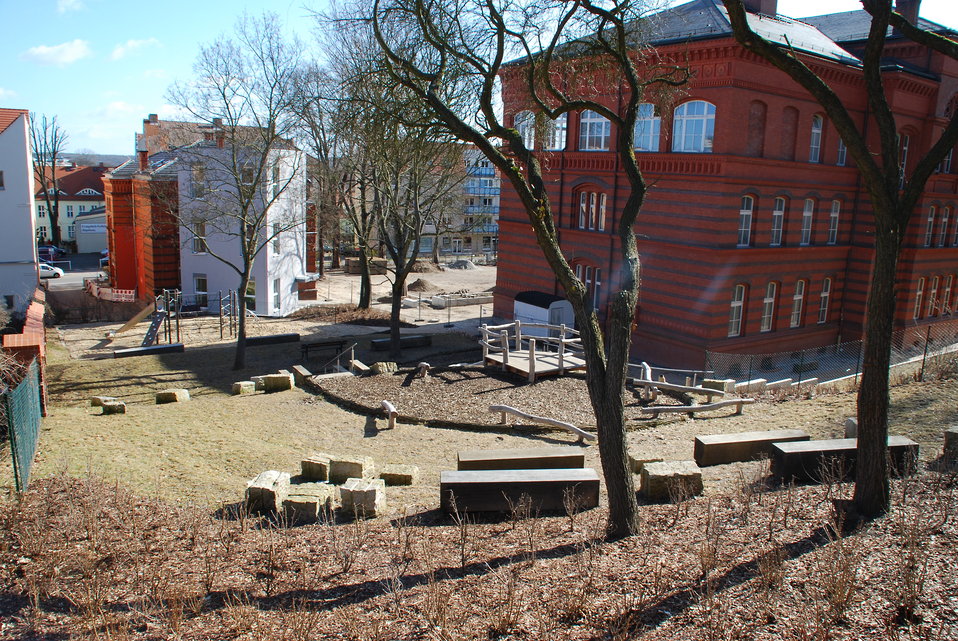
Abriss Bahnhofstunnel Frankfurt (Oder) Ehemaliges Friedrichsgymnasium neue Freiflächengestaltung